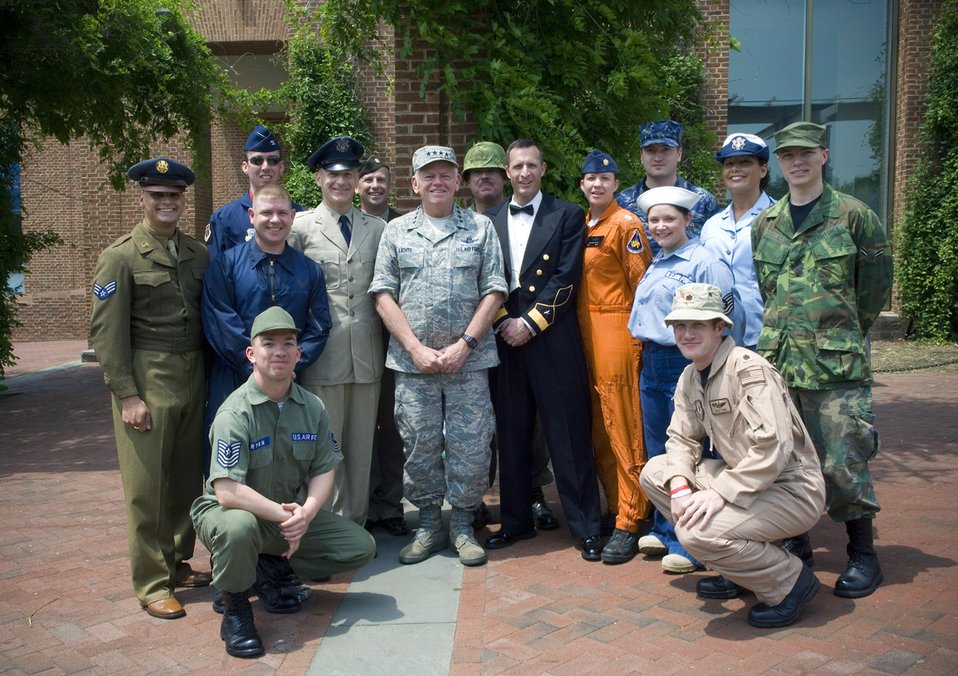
Airmen trace roots of independence during Air Force Week in Philadelphia

Gen. Arthur J. Lichte, Air Mobility Command commander, joins members of the Parade of Uniforms exhibit for a photo opportunity during Air Force Day at Independence Hall, May 27, in conjunction with Air Force Week - Philadelphia. The Parade of Uniforms exibit is the largest private collection of vintage Air Force uniforms owned and showcased by Tech. Sgt. Jack Waide stationed at Elmendorf Air Force Base, Alaska. The week is designed to broaden awareness of the U.S. Air Force's role in the war on terrorism and strengthen support for Airmen serving worldwide in defense of freedom.